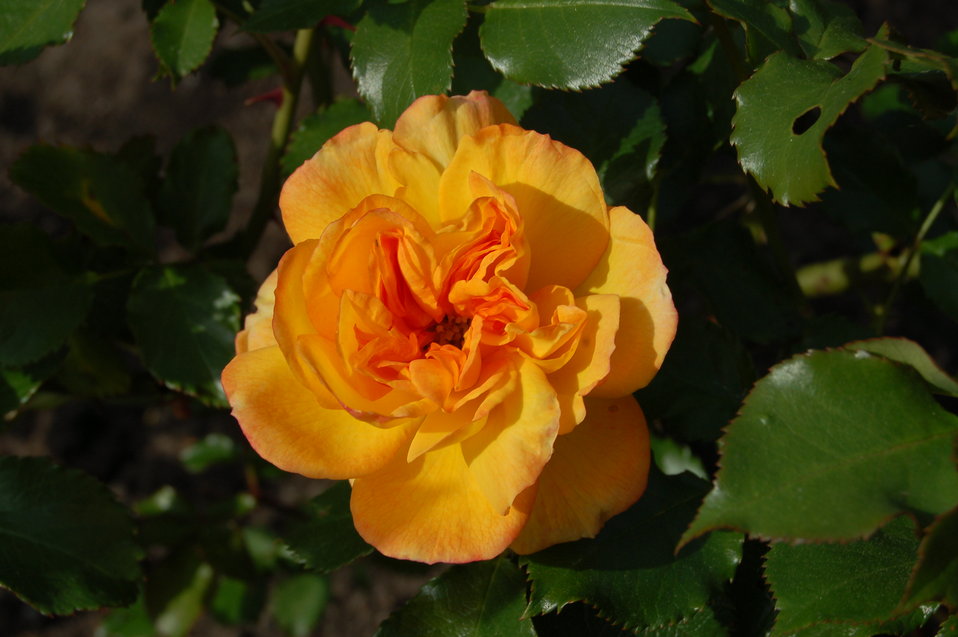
Rosa 'Sahara' Deutsch: Strauchrose 'Sahara' (Tantau 1996)